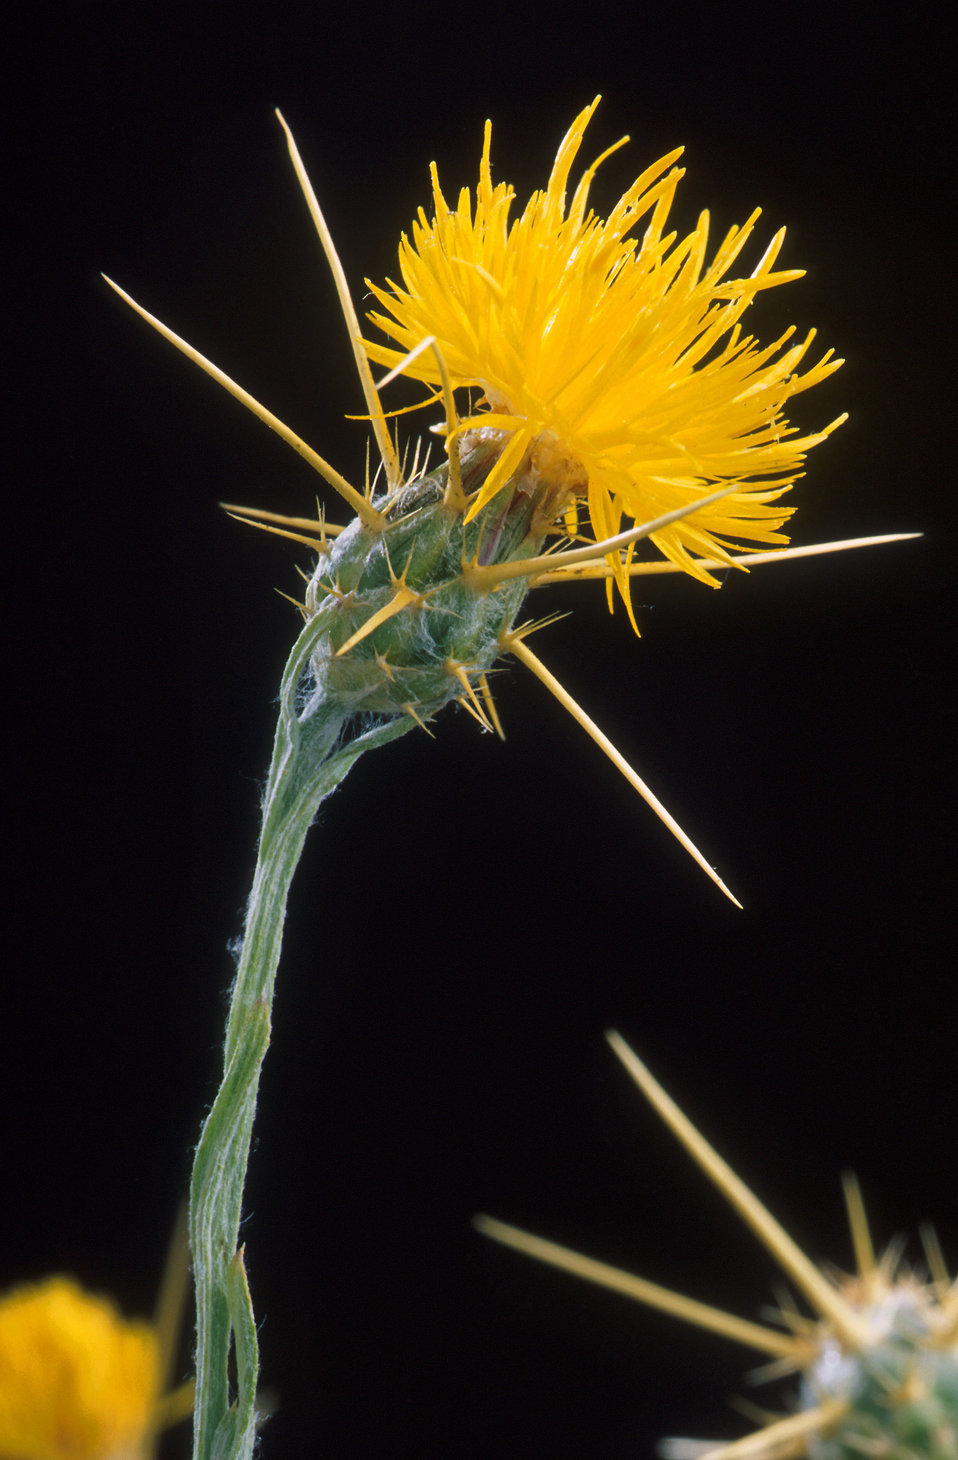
The yellow starthistle (Centaurea solstitialis) has become an invasive species and noxious weed in North America.